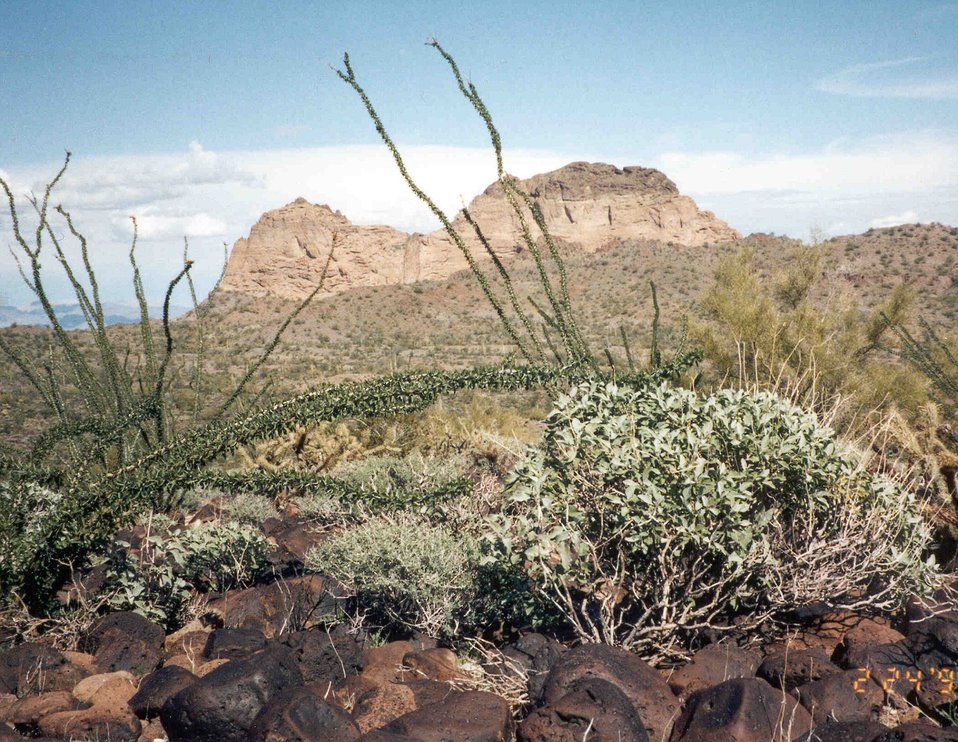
Beautiful scenery in the New Waters Wilderness Area